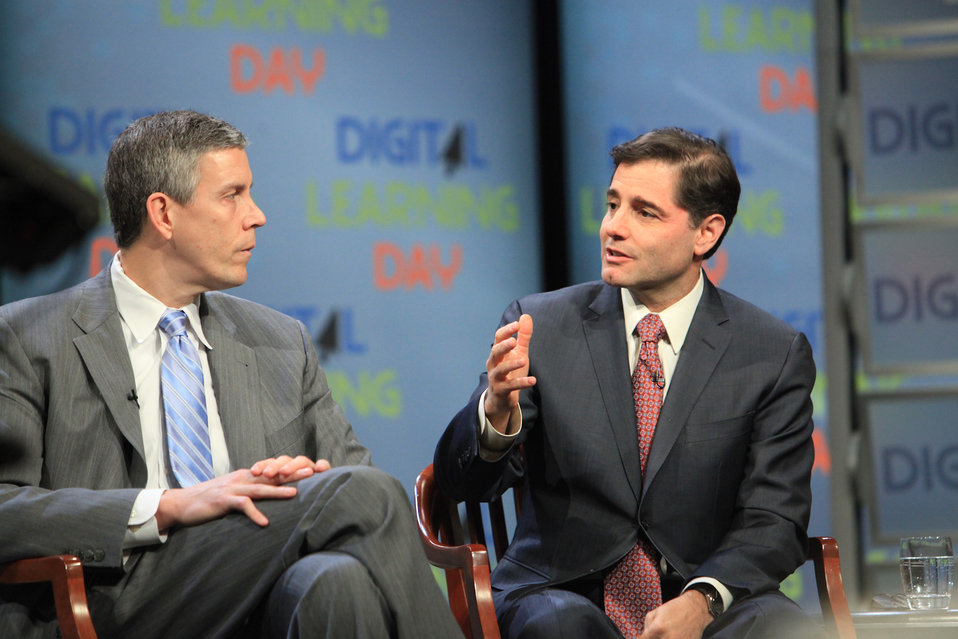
FCC Chairman Genachowski Speaks at Digital Learning Day Town Hall

FCC Chairman Genachowski speaks at the first-ever Digital Learning Day Town Hall with U.S. Department of Education Secretary Arne Duncan in Washington, DC, on February 1, 2012.